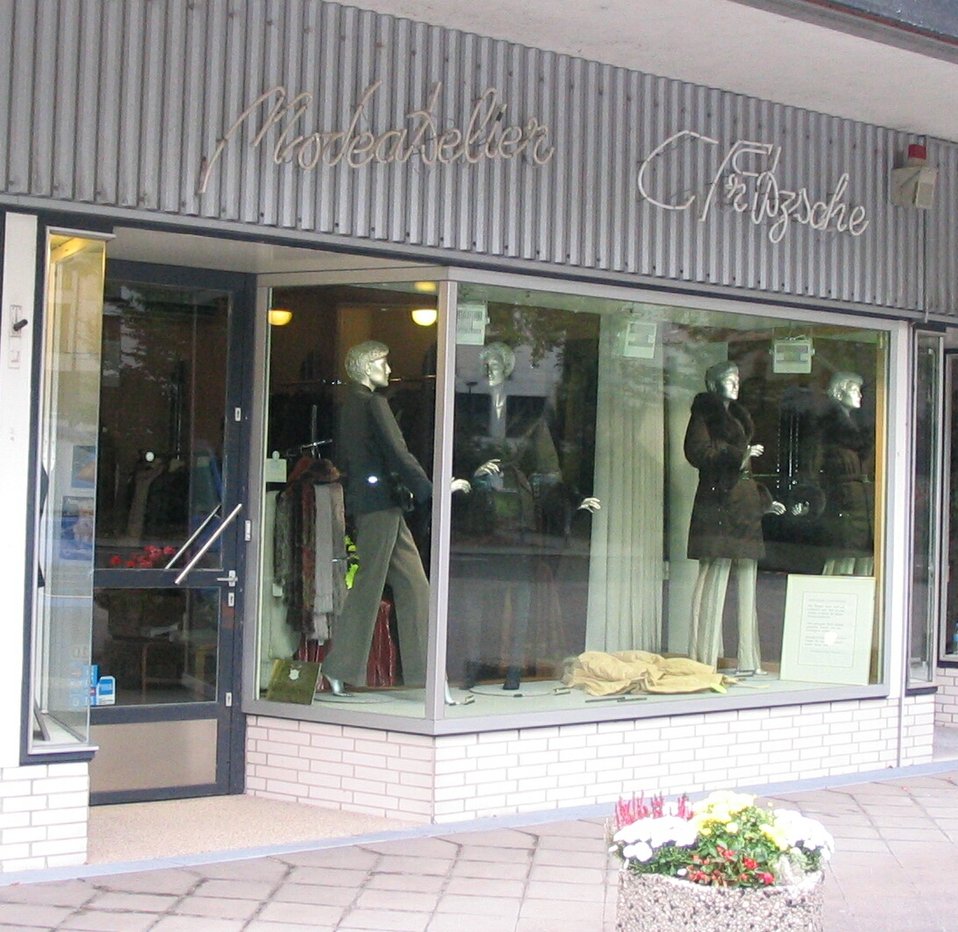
Deutsch: Fritzsche, Kürschner in Düsseldorf, Felix-Klein-Straße 1 (Reeser Platz)